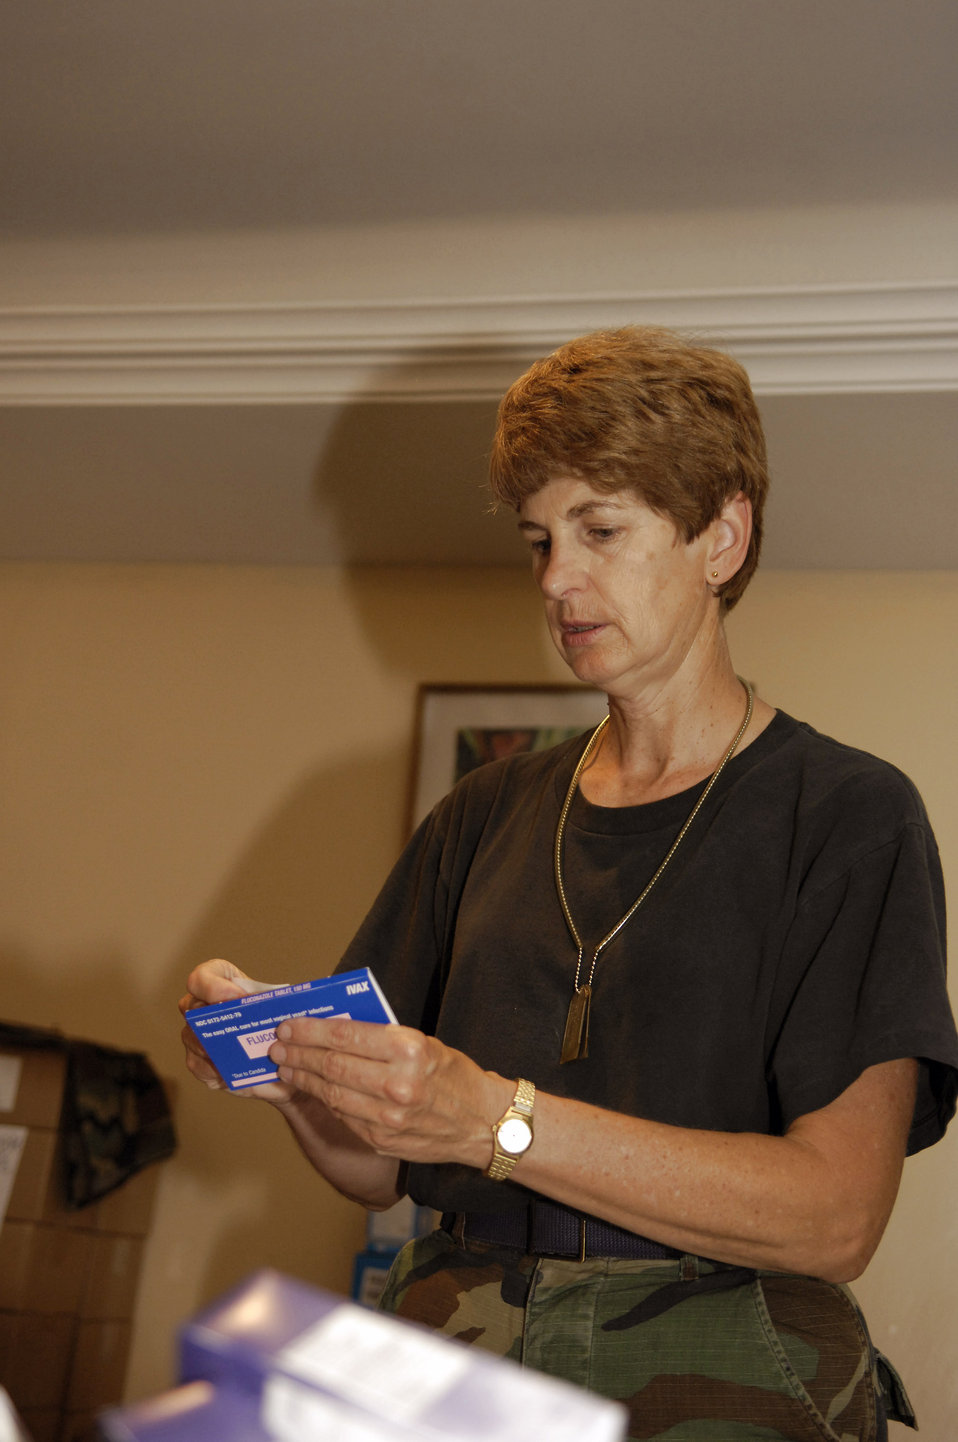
Pharmacist dispenses much-needed medicine for Malians

Maj. Linda Demary labels one of more than 40 medicines that will be distributed to thousands of Malians during MEDFLAG 08, July 14. More than 90 servicemembers deployed to Bamako, Mali, for MEDFLAG 08, a multinational medical training exercise designed to enhance medical capabilities and readiness for U.S. and African Forces. Maj. Demary is a nurse deployed from the 31st Medical Group, Aviano Air Base, Italy.